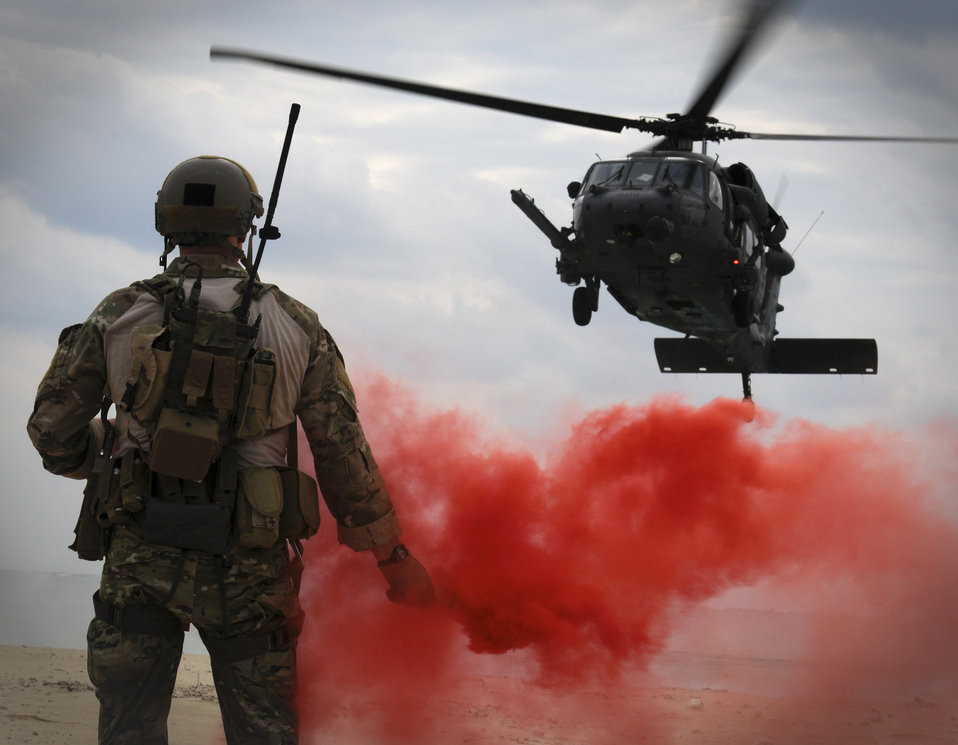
Stop on red

Maj. Matthew McGuinness pops a flare to signal an HH-60G Pave Hawk where to land during Exercise Cope Angel 12 Dec. 5, 2011, in Okinawa, Japan. The 33rd and 31st Rescue Squadrons paired up with partners from the Japan Air Self-Defense Force during Cope Angel to train on water and land rescue and triage tactics. McGuiness is the 31st Rescue Squadron director of operations.